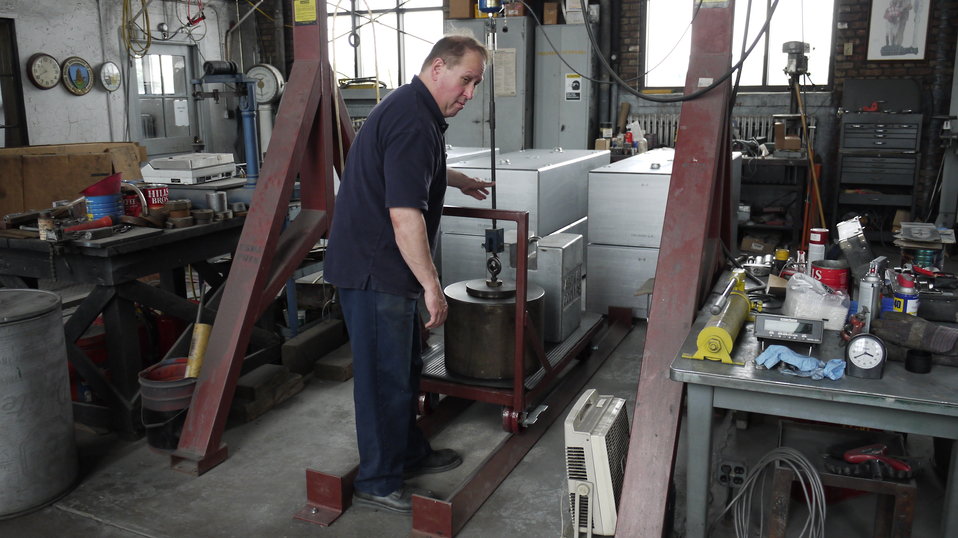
U.S. Department of Agriculture’s (USDA) Grain Inspection, Packers, and Stockyard Administration (GIPSA) industrial specialist Marcus Harwitz calibrates 1000 lb. test weights using USDA GIPSA load cell comparator at USDA GIPSA Master Scale Depot in Chicago, IL on Jul 2, 2013. USDA GIPSA entered into an agreement with the National Institute of Standards and Technology (NIST) and the Association of American Railroads (AAR) in 1980 transferring responsibility to USDA’s GIPSA to maintain the Master Scale facility in Chicago, IL and calibrate all the master scales in the continental U.S. annually.